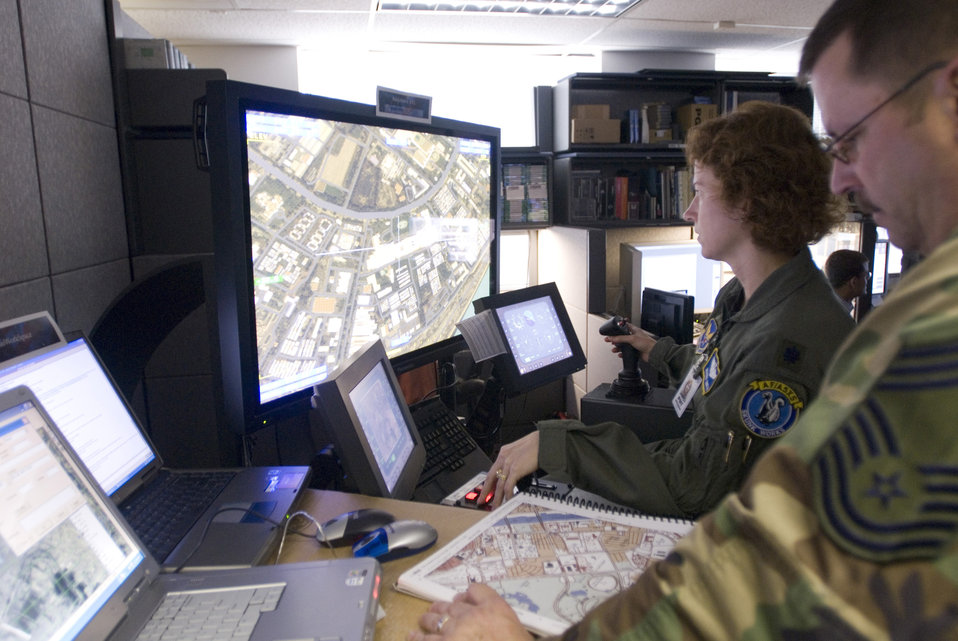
Tracking laser

Lt. Col. Beverly Smith and Chief Master Sgt. Stanley Milinski operate an airborne tracking laser during an experiment with future directed-energy weapons at the Pentagon Oct. 18. They are assigned to the Operations and Strategy office at U.S. Air Force headquarters.